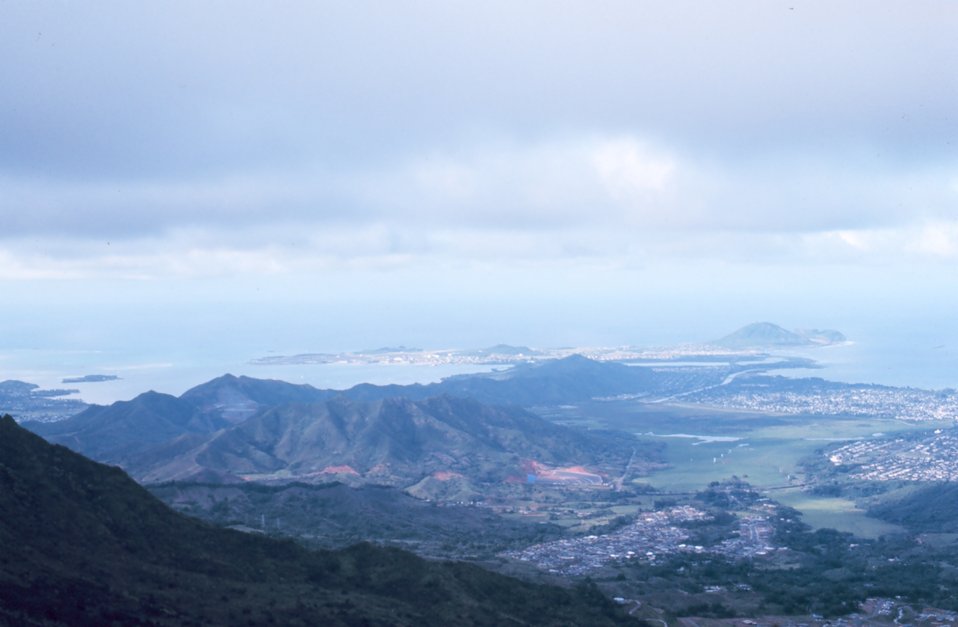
Looking down to the Kaneohe Bay area